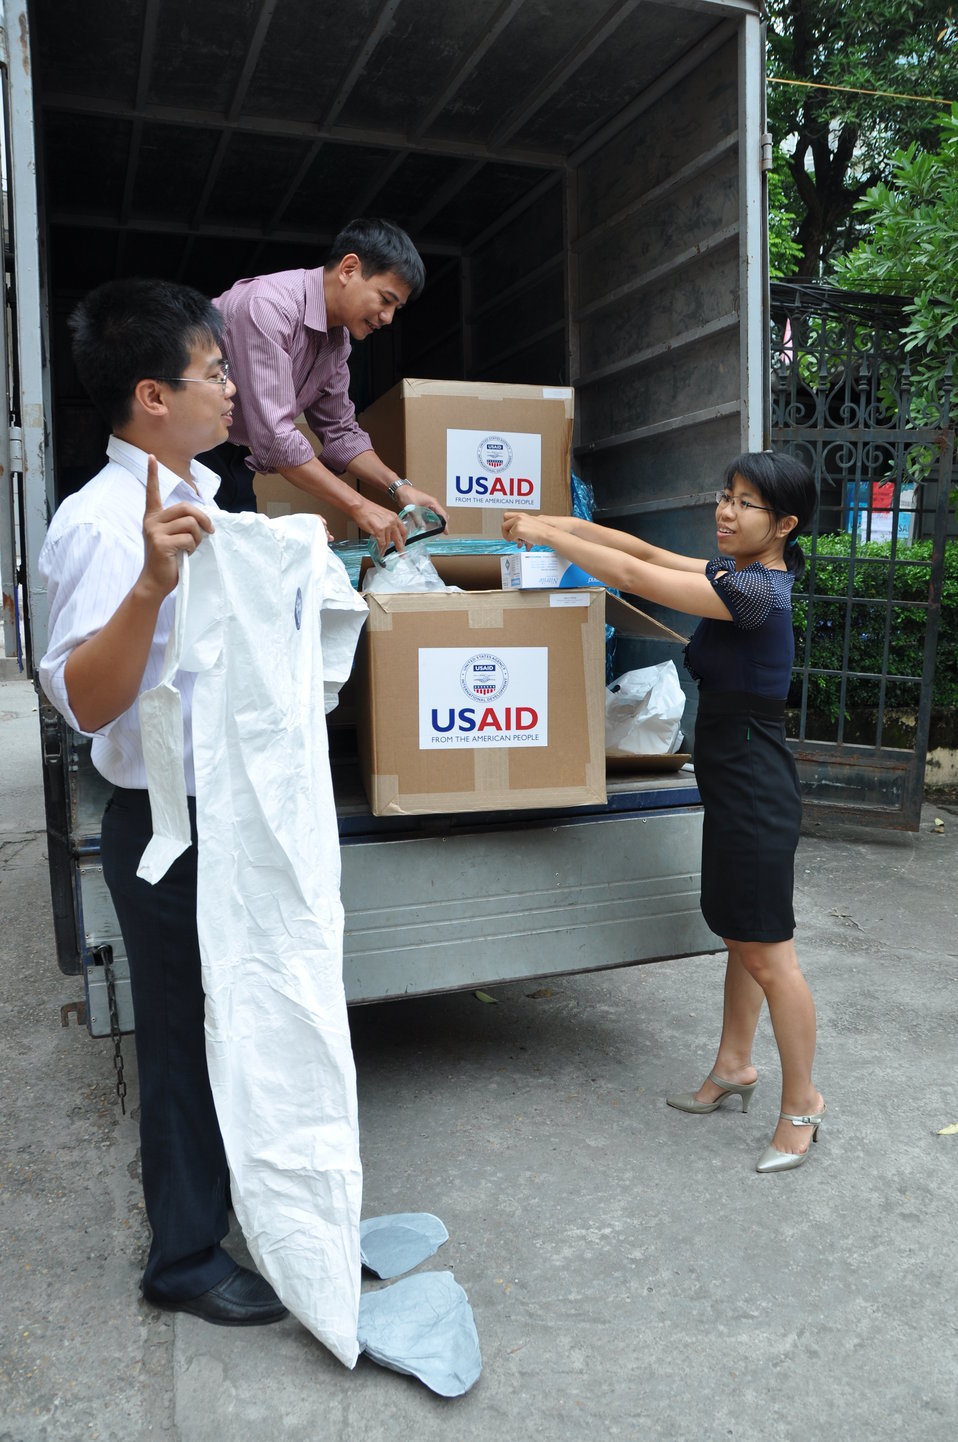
Vietnamese officials inspect new personal protective equipment in Hanoi in September 2011.

Nguyen Dug Hanh of Vietnam's Department of Animal Health (on truck), transport supervisor Doan Phu Huyen (left) and Nguyen Thi Thanh Diep inspect a shipment of 1,700 personal protection kits -- suits, masks, gloves, goggles and related items -- in September 2011 before they are shipped to Can Tho, Ha Nam, Hung Yen, Kieng Giang, and Quang Tri provinces to help veterinary officials and animal health workers battle disease outbreaks in the country. Since 2007, USAID has provided over 15,000 protective equipment kits for animal health workers in Vietnam.